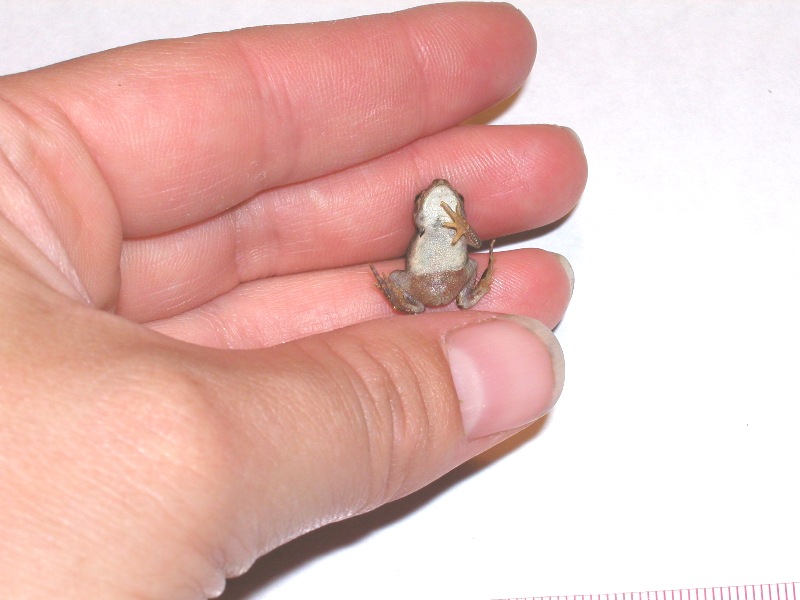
Toad with missing front limb.

(Christina Kravitz/USFWS) Location: Rainwater Basin Wetland Management District, NE.